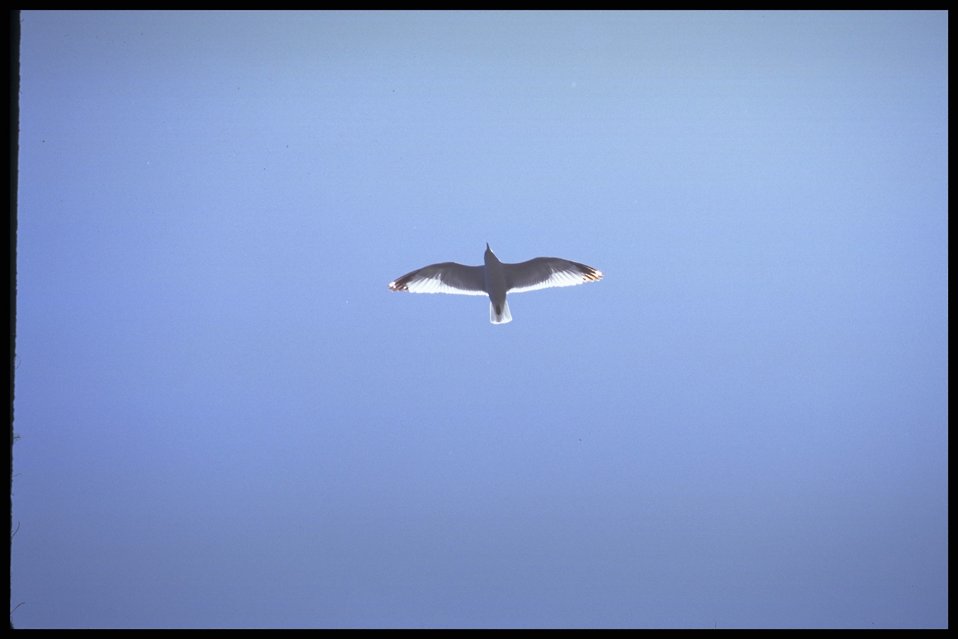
Far shot of Sea Gull in flight, Lakeview District.